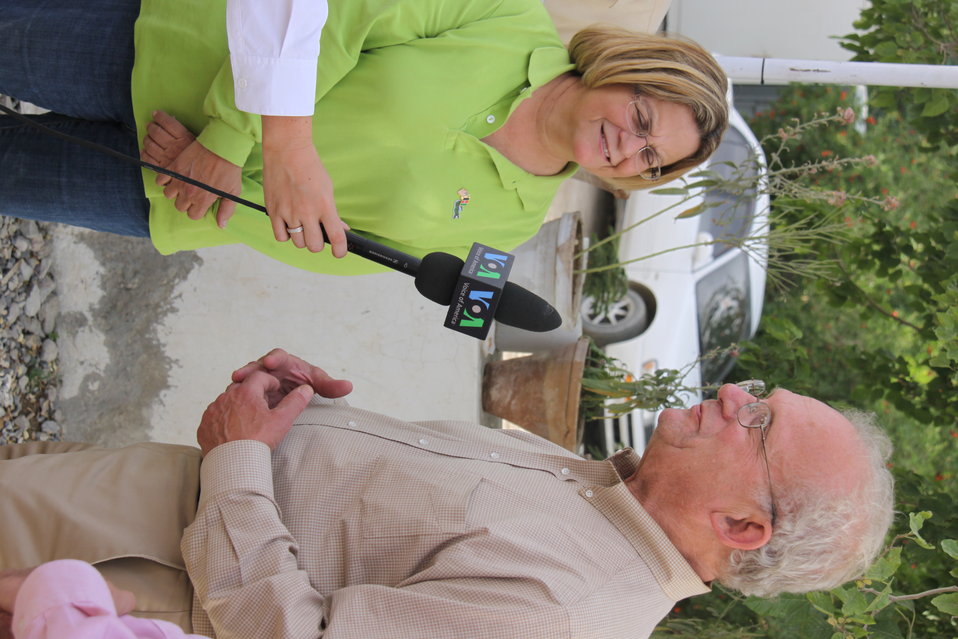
Meeting with Local Leaders in Kandahar